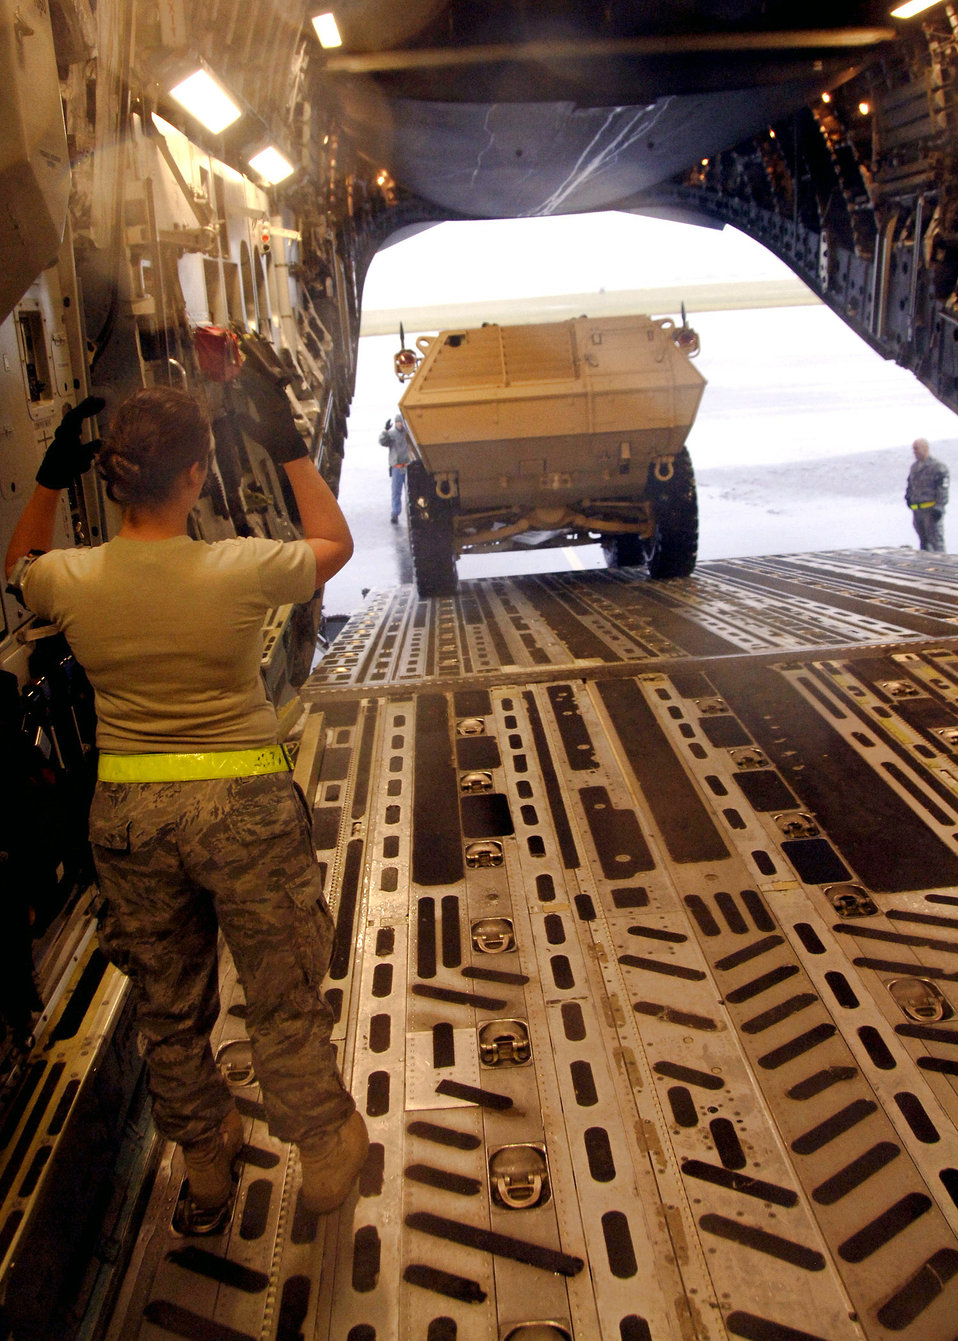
Charleston officials ship vehicles to support warfighters

Senior Airman Ashley Kelly guides an M1117 armored security vehicle onto a C-17 Globemaster III Oct. 24 at Charleston Air Force Base, S.C. The ASV is a four-wheel-drive vehicle that provides ballistic protection to warfighters who are using them against various threats. Airman Kelly is assigned to the 437th Aerial Port Squadron.